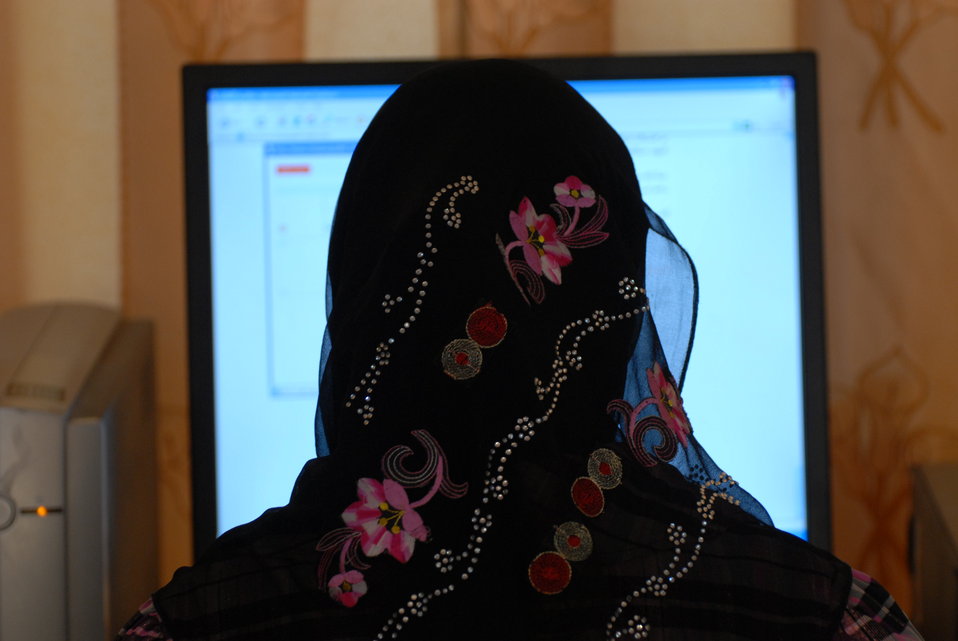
'On the Road' in Balkh Province